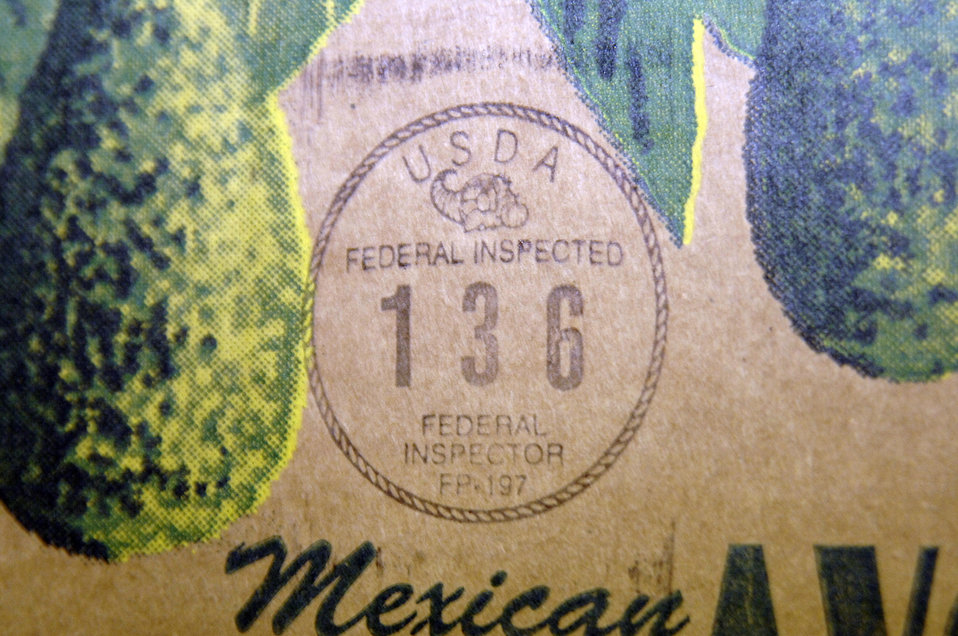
The U. S. Department of Agriculture (USDA) Agricultural Marketing Service (AMS) approval stamp on a box of avocados at the Philadelphia Food Distribution Center in Philadelphia, Pennsylvania on May 21, 2008.